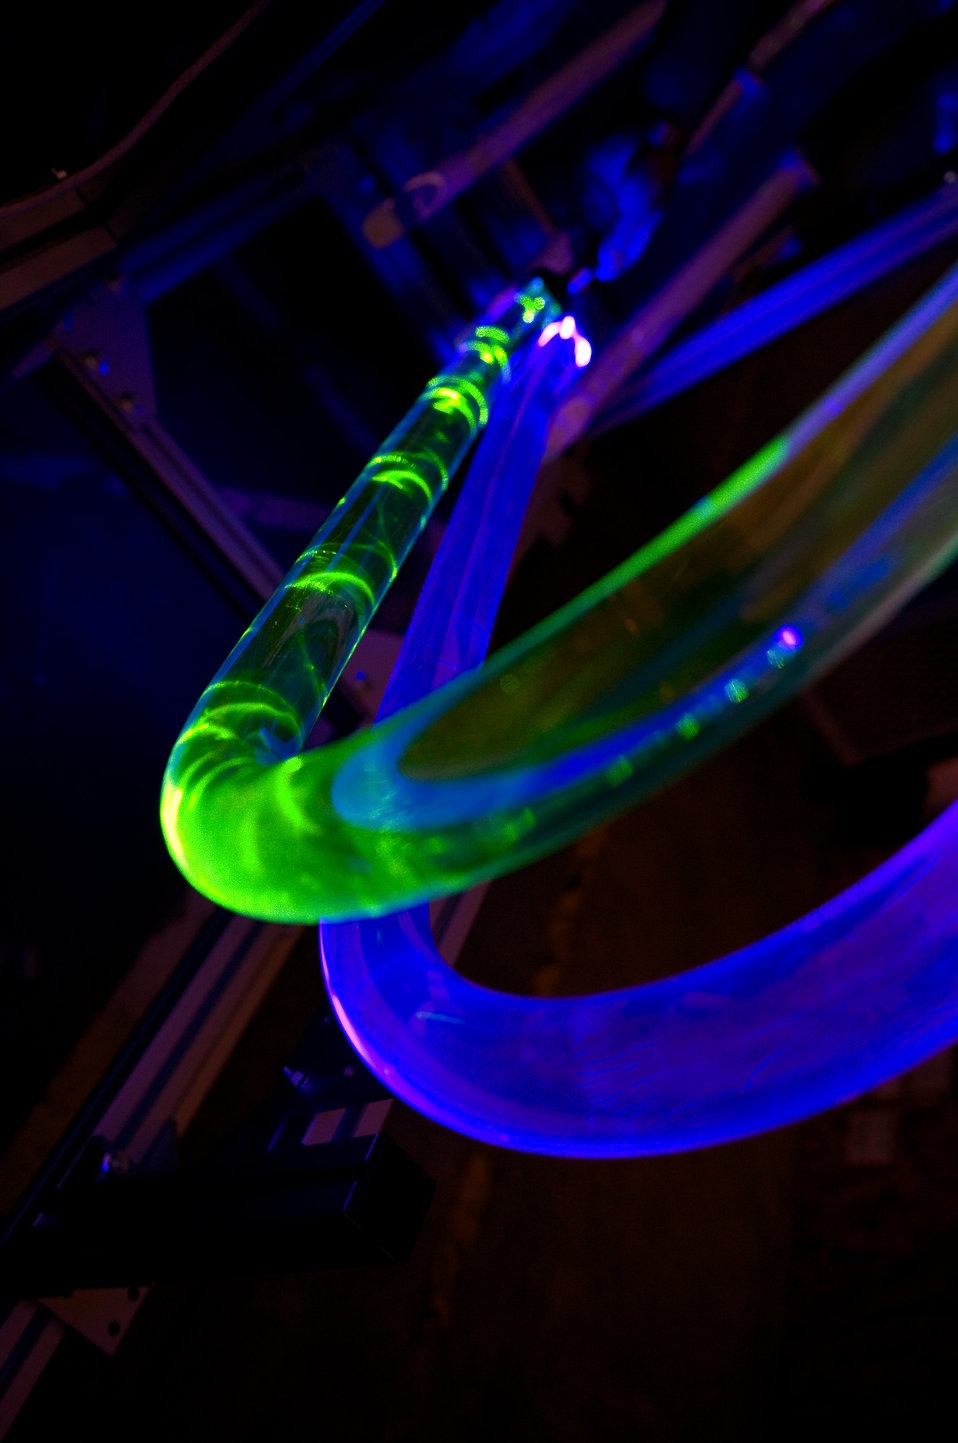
THE LIGHT GUIDE FOR THE 12GEV DETECTORS AT CEBAF IS PART OF THOMAS JEFFERSON NATIONAL ACCELERATOR FACILITY.

The Jefferson lab is built for nuclear physics research. Scientists use superconducting electron accelerating technology at the lab's Continuous Electron Beam Accelerator Facility (CEBAF) to conduct experiments. High energy electron beams from the accelerator allows scientists to probe the atoms nuclear, reveling how quarks make up protons, neutrons, and the nucleus itself.